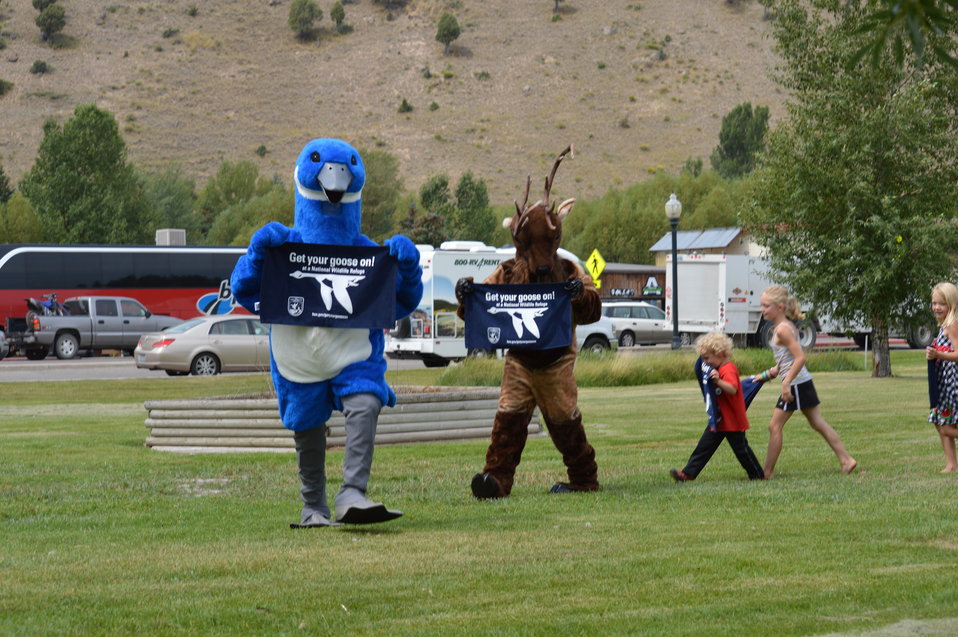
Get Your Goose On! - National Elk Refuge Style

On August 10, 2012 the U.S. Fish and Wildlife Service and Partners celebrated the 100 year anniversary of the establishment of the National Elk Refuge. In these photos, young attendees, along with Puddles the Blue Goose and the National Elk Refuge's mascot, showed us how to Get Your Goose On! with style.